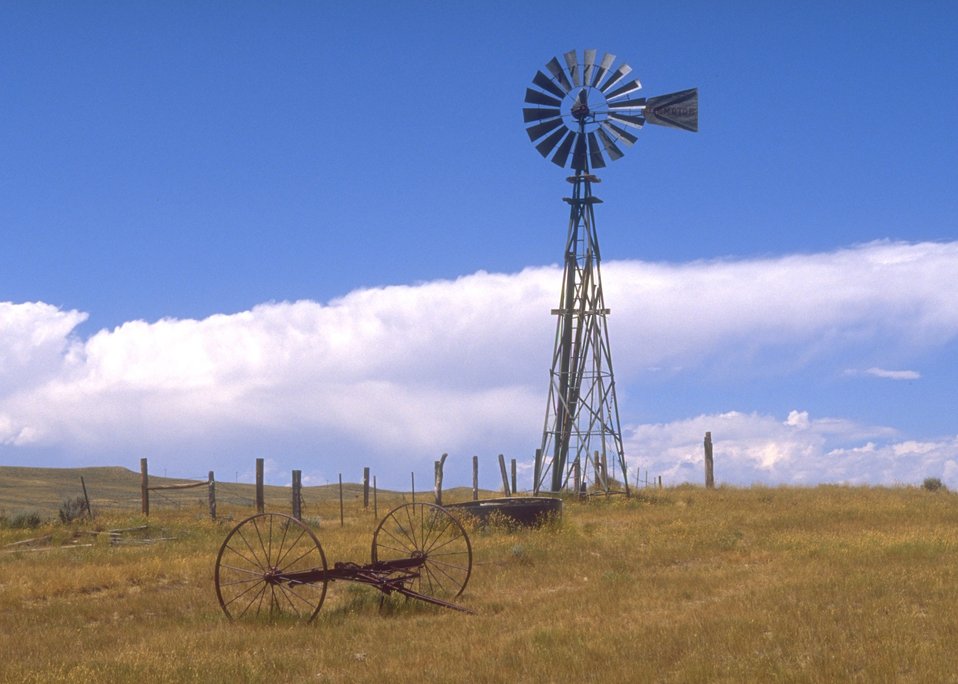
Windmill south of Gillette, WY